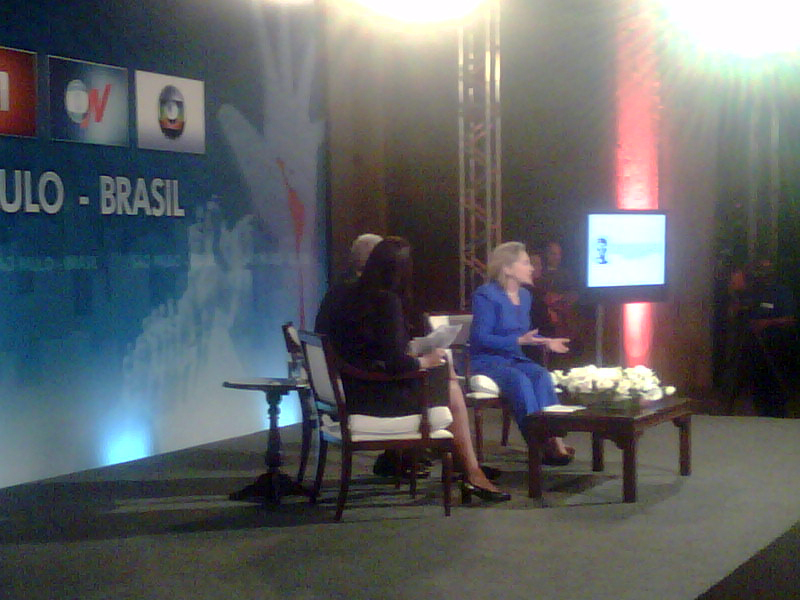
Secretary Clinton Participates in Sao Paulo Townterview

U.S. Secretary of State Hillary Rodham Clinton speaks at a Townterview event in Sao Paulo, Brazil, March 3, 2010.